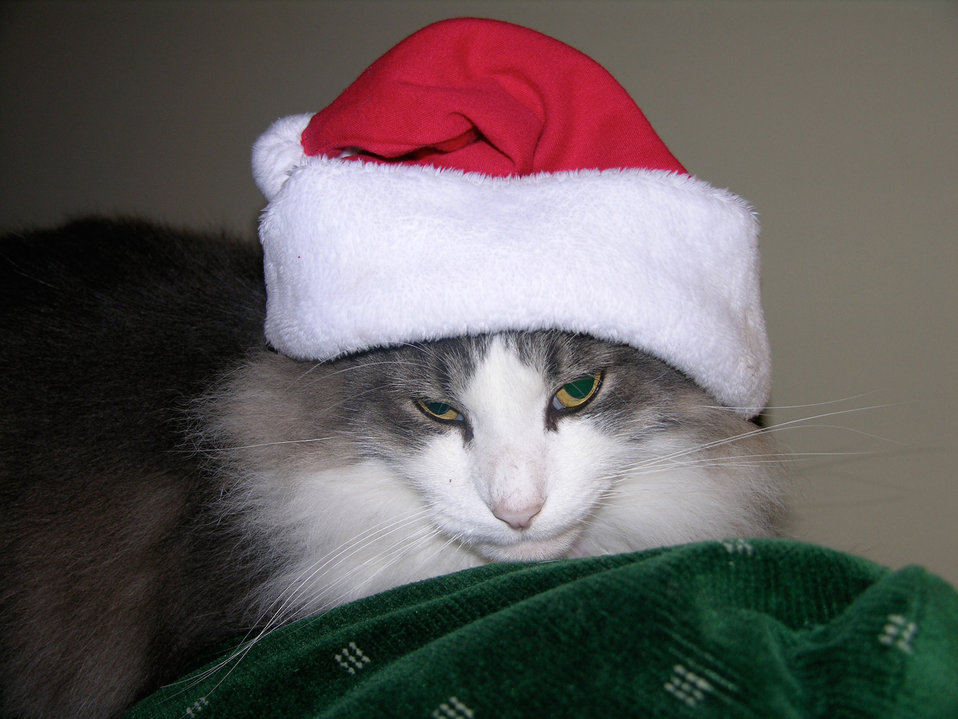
My cat hates xmas

These are a few of my favorite things..